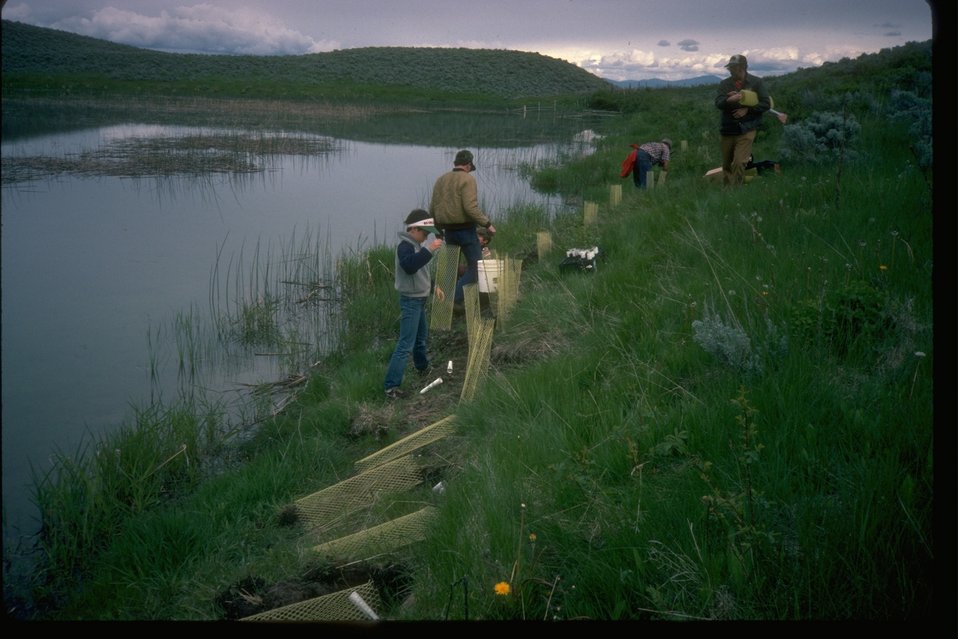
Planting trees to improve riparian habitat at Washburn Lake, Washington.